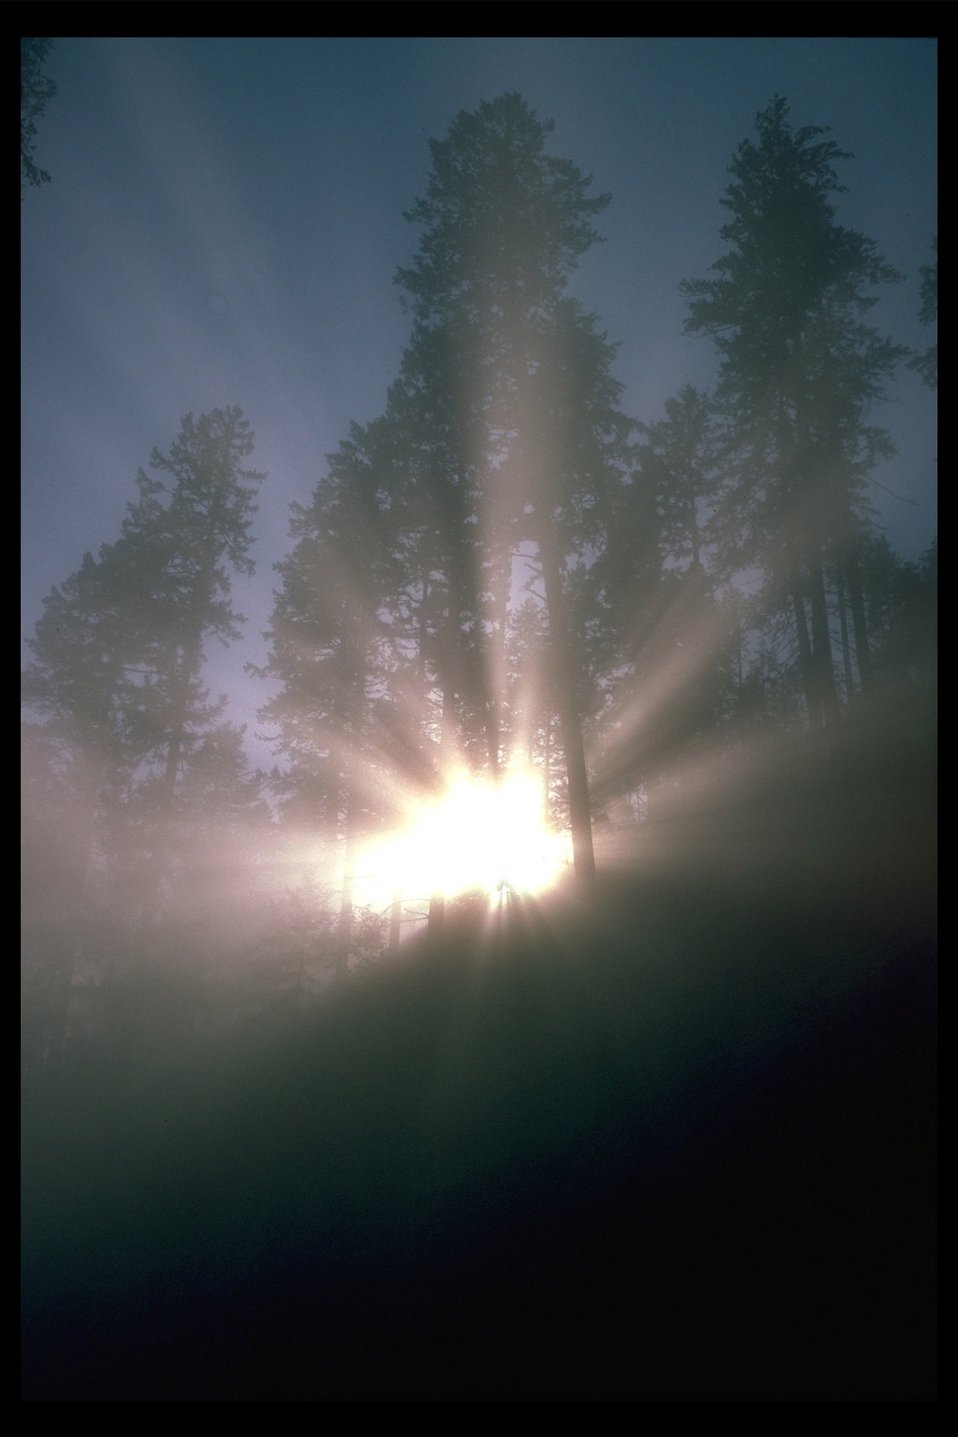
Sunrise on West Fork Trail Creek.